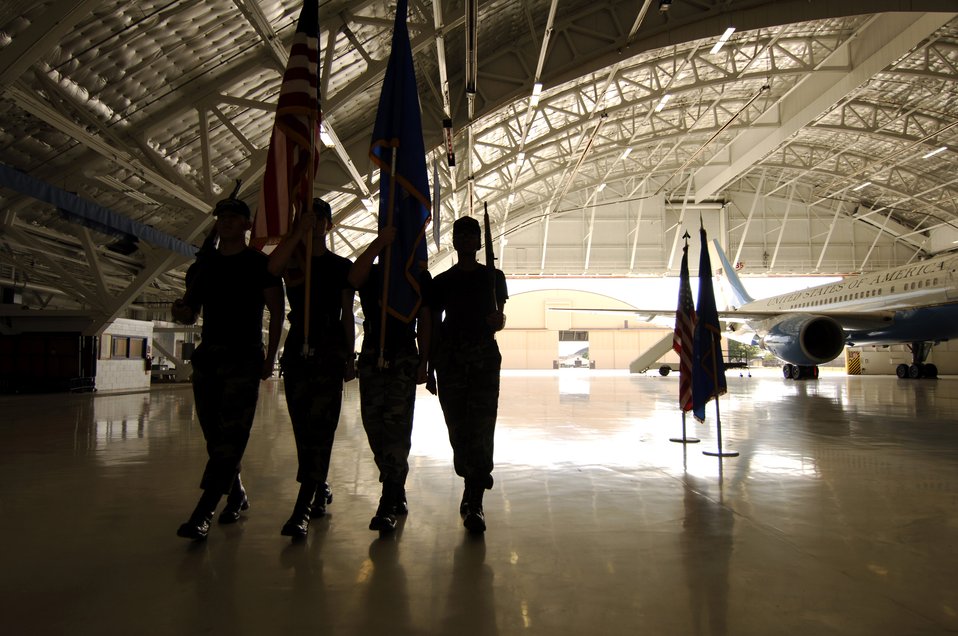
Looking very sharp!

Airmen with the base honor guard practice ceremonial routines Oct. 2 during a weekly training session at Andrews Air Force Base, Md.